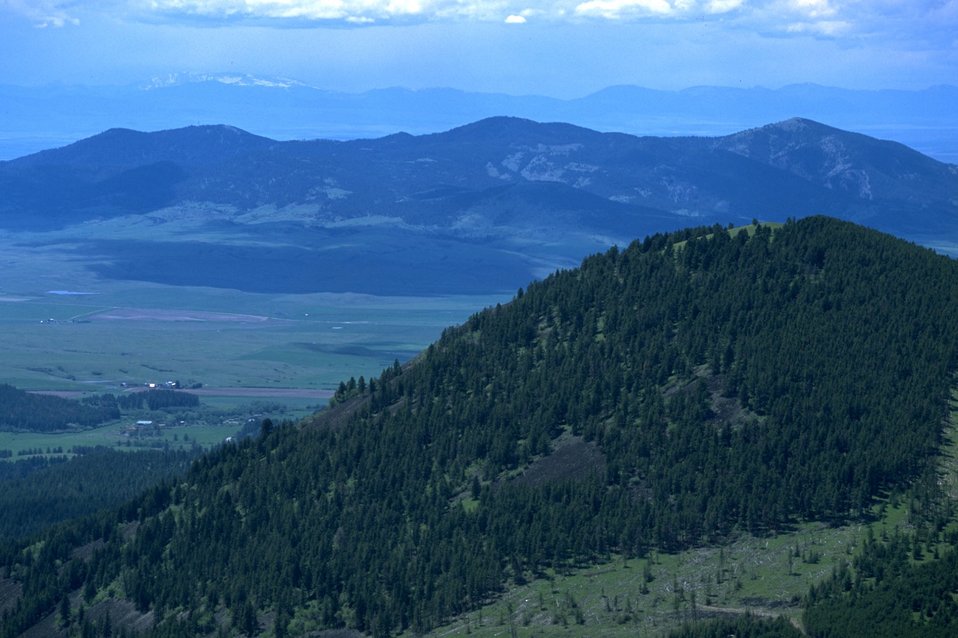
Looking toward North Moccasin in the Judith Mountains